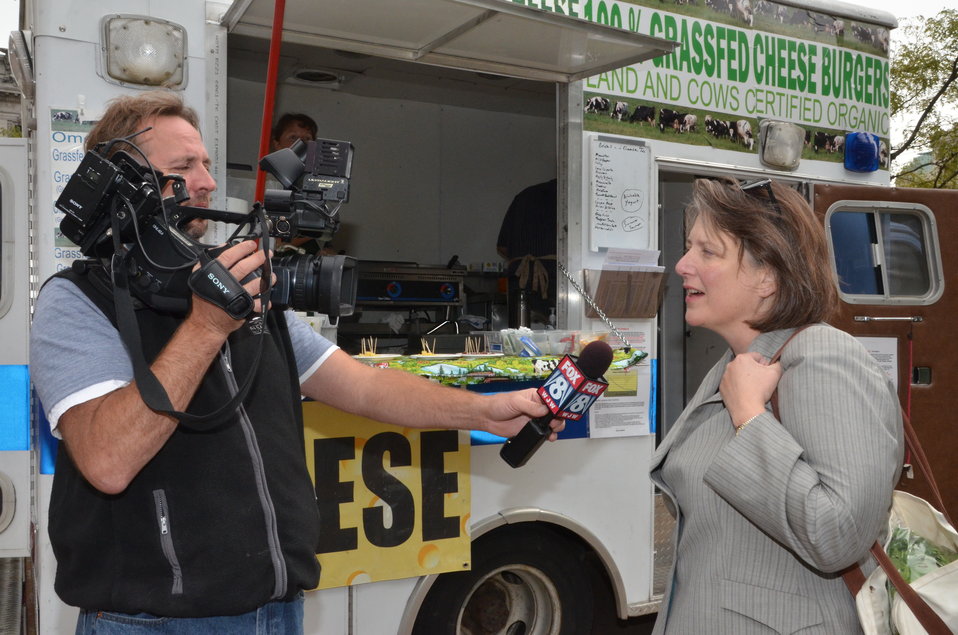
Agriculture Deputy Secretary Kathleen Merrigan provides a spot interview with Cleveland, Ohio's Fox 8 television station at the Downtown Farmers' Market at Public Square on Sept. 21, 2012.